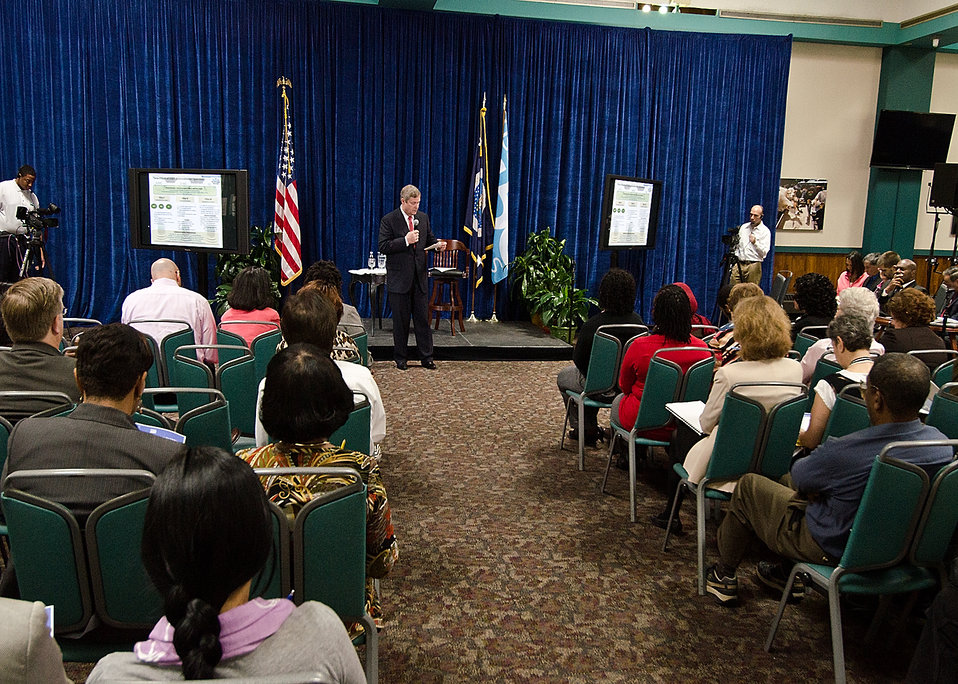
Agriculture Secretary Tom Vilsack offered U. S. Department of Agriculture (USDA) employees the opportunity to ask questions about the Blueprint for Stronger Service Initiative and hear directly from the Secretary Vilsack during the Ask The Secretary event held in the South Building Cafeteria, in Washington, D.C., on Wednesday, March 21, 2012, The Blueprint for Stronger Service Initiative aims to build a modern and efficient service organization that is closely timed with technological innovations - and better suited to respond to 21st century agricultural challenges.